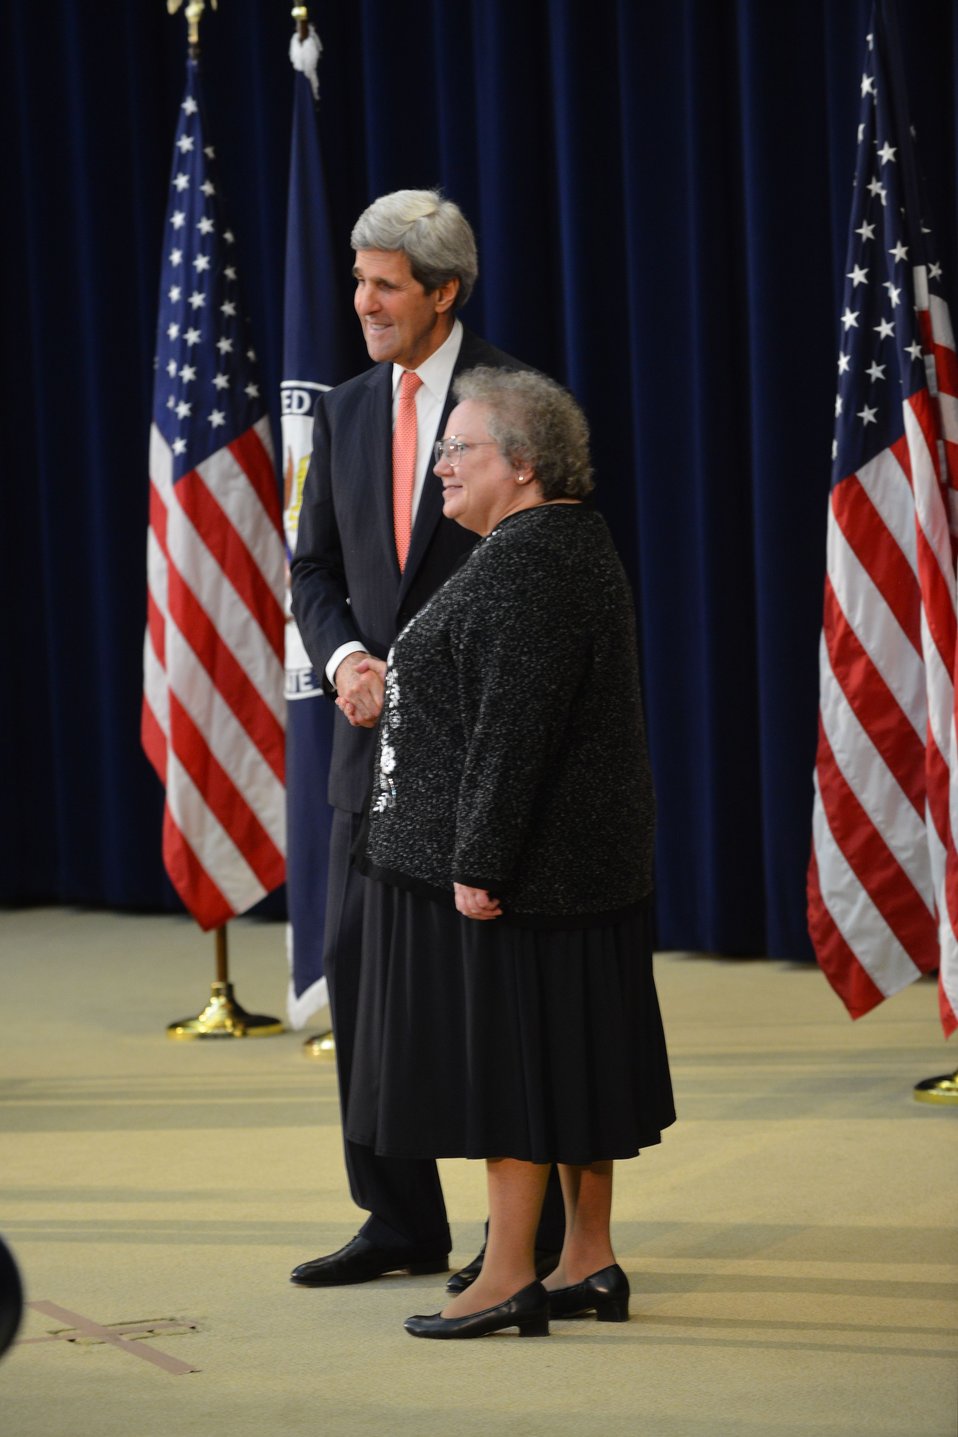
Secretary Kerry Hosts the Annual Department of State Retirement Ceremony

U.S. Secretary of State John Kerry hosts the annual Department of State Retirement Ceremony at the U.S. Department of State in Washington, D.C., on January 28, 2014.